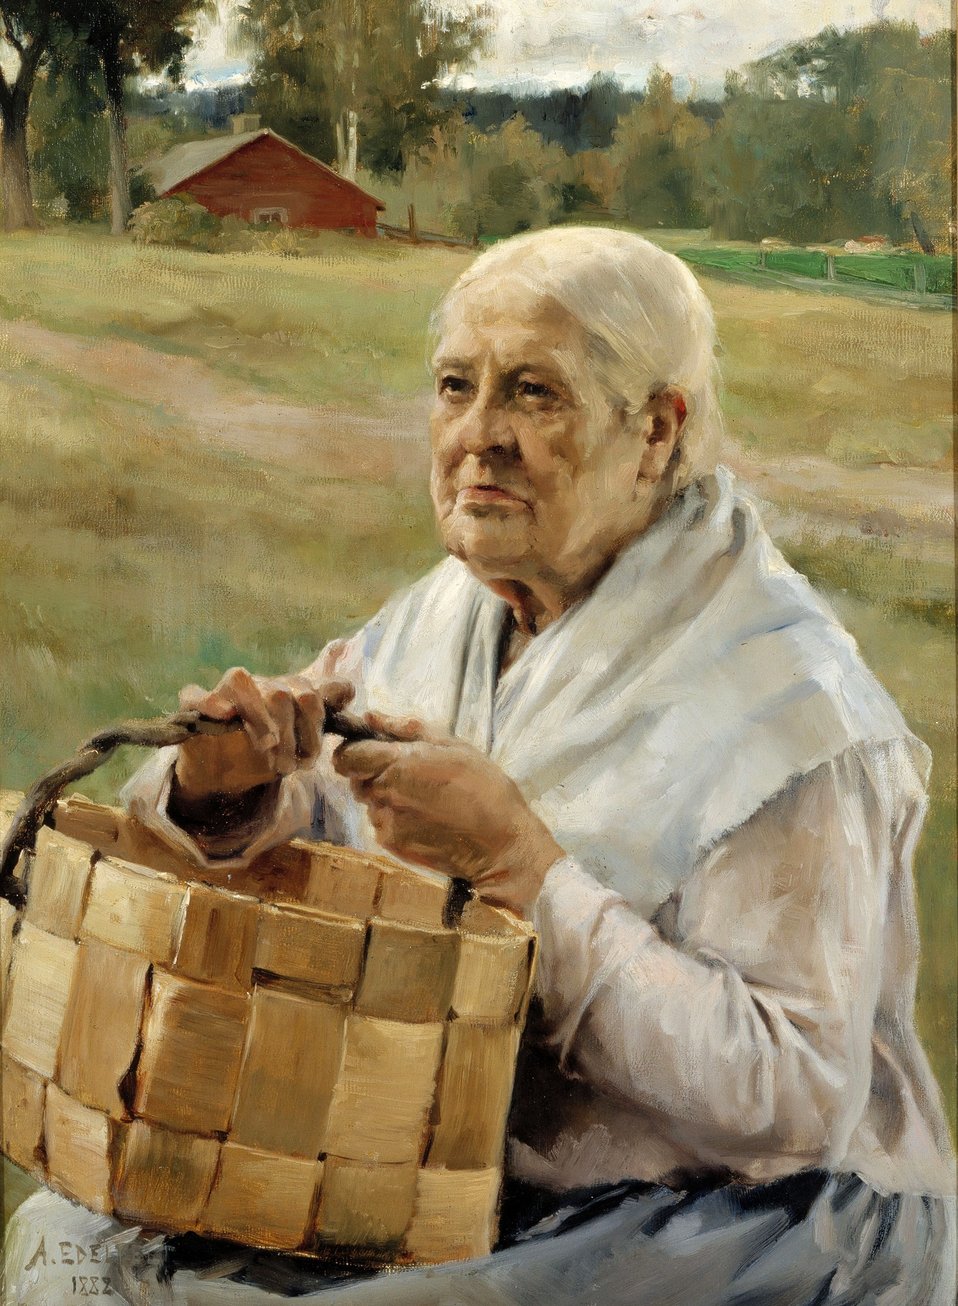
Albert Edelfelt - Eukko pärekoreineen